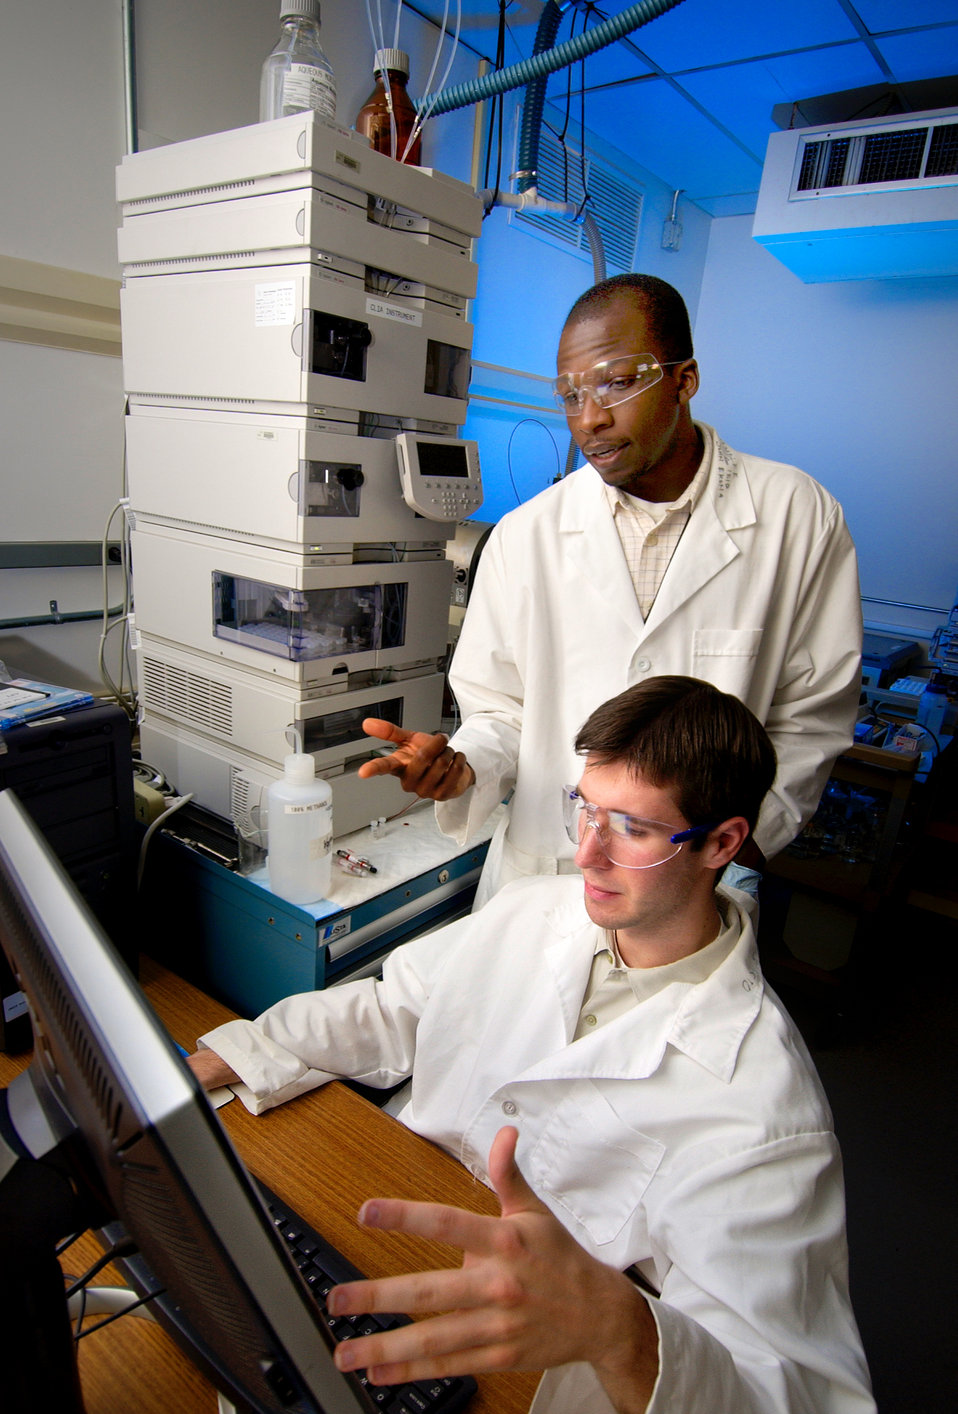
This 2004 photograph showed John Ekong (standing), and Jason Tully as they were analyzing newly acquired data, and discussing laboratory results in the Personal Care Products Laboratory (PCPL) located in a CDC lab on the organization's Chamblee, Georgia campus.